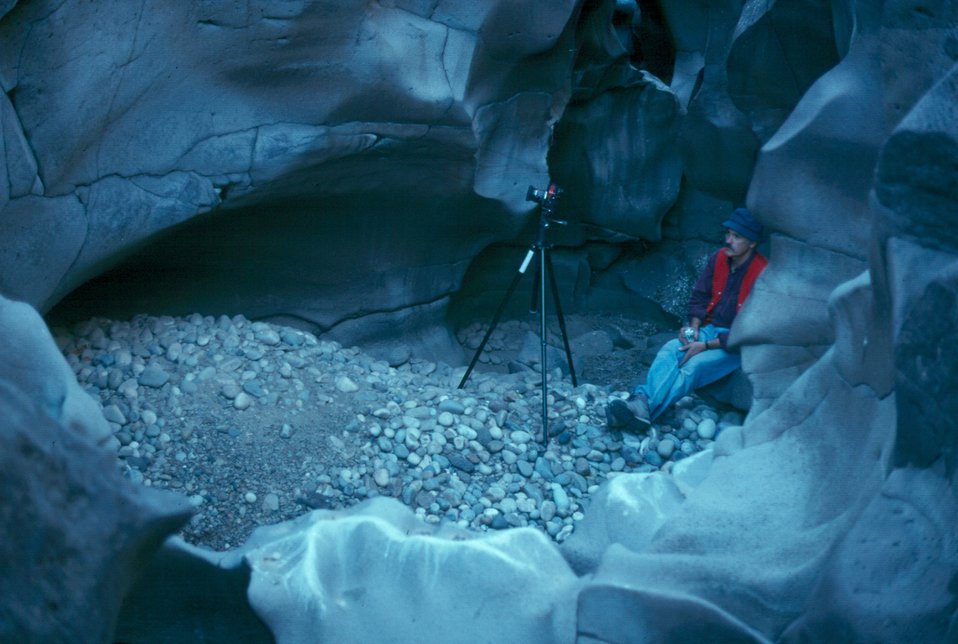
Bed of pothole Shoshone Field Office USRD Upper Snake River District